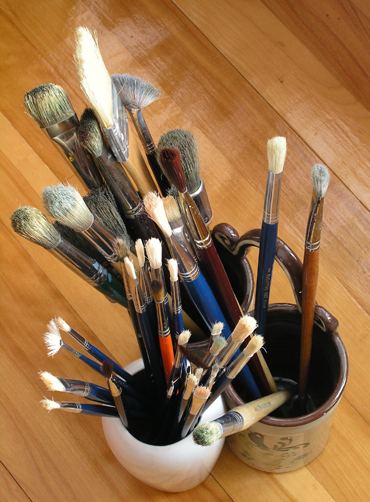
Paint brushes Deutsch: Pinsel